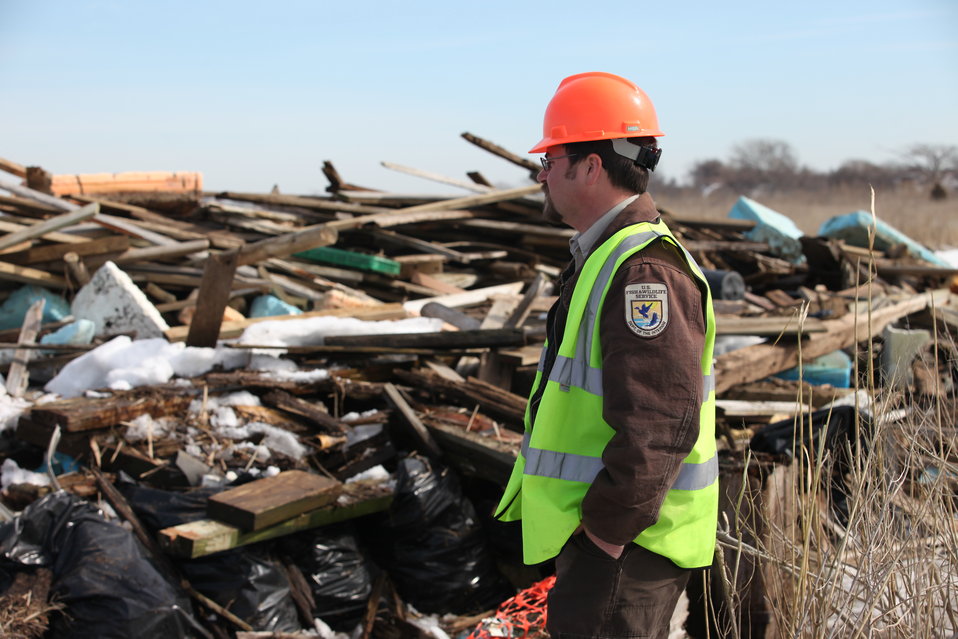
Wildlife biologist Robin Donohue surveys the debris field at Lido Beach WMA.